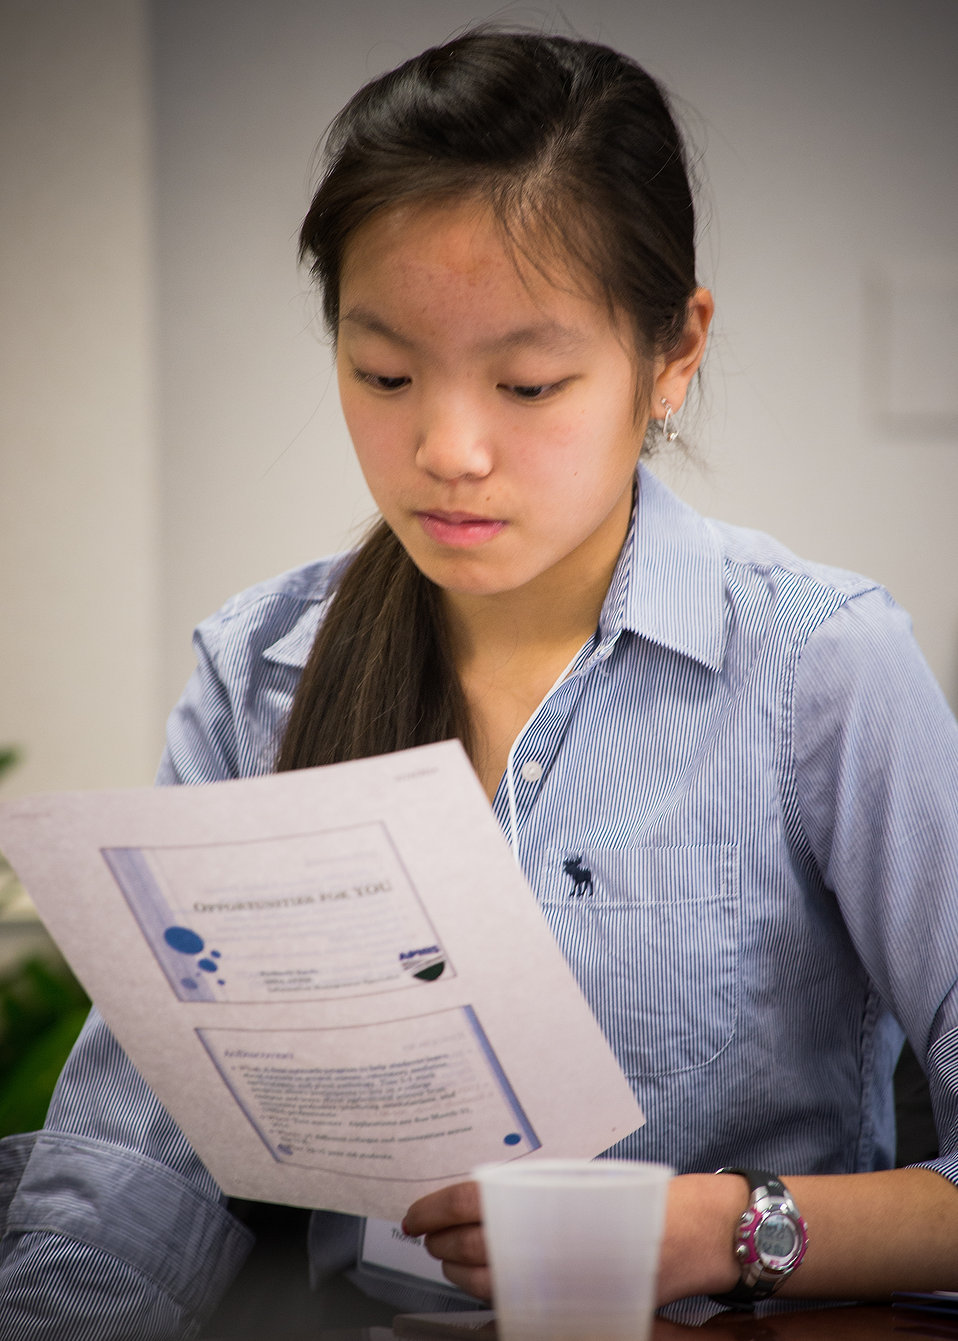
Jennifer Song a student from Thomas Jefferson High School of Science and Technology in Alexandria, VA. reviews information from the U.S. Department of Agriculture, Animal and Plant Health Inspection Service during the United States Department of Agriculture (USDA), Office of the Chief Information Officer (OCIO) IT Job Shadow Day, Tuesday, Mar. 25, 2014. The OCIO IT Job Shadow Day hosts students from local high schools in the Washington, D.C. area annually with IT professionals and agricultural specialists from a variety of mission areas at USDA.